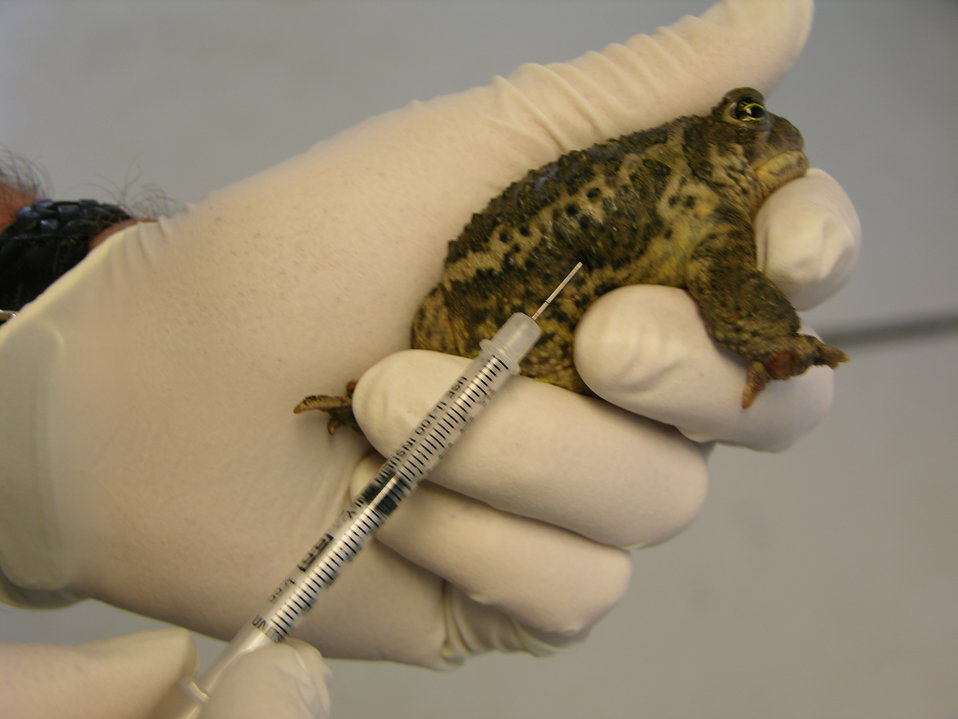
Wyoming Toad Disease Check

The toads are checked for various diseases, this helps maintain a healthy breeding population (within the hatchery).